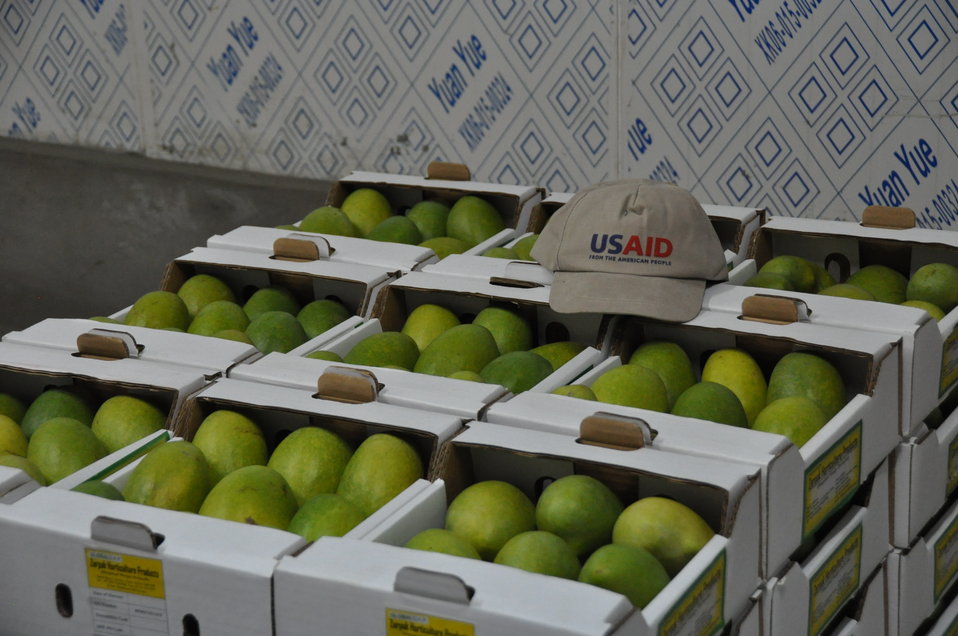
Zarpak Mango Farm